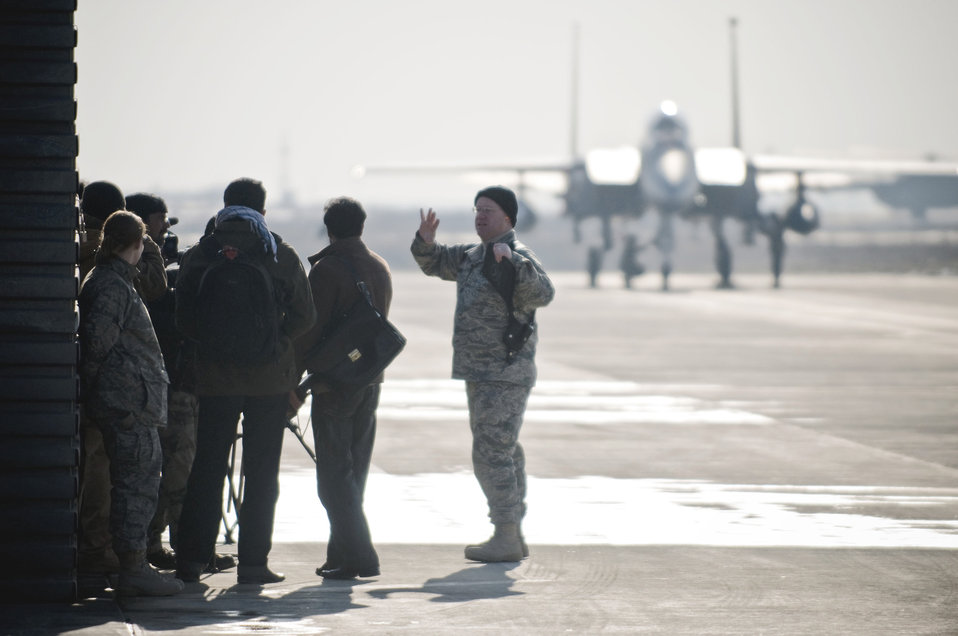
Afghan media learn about close-air support

Capt. Tom Wenz briefs Afghan media on close-air support while an F-15E Strike Eagle is disarmed in the background Jan. 5 at Bagram Airfield, Afghanistan. Members of the Afghan media were invited on base to learn about the 455th AEW close-air support mission. Captain Wenz is a 455th Air Expeditionary Wing public affairs officer.